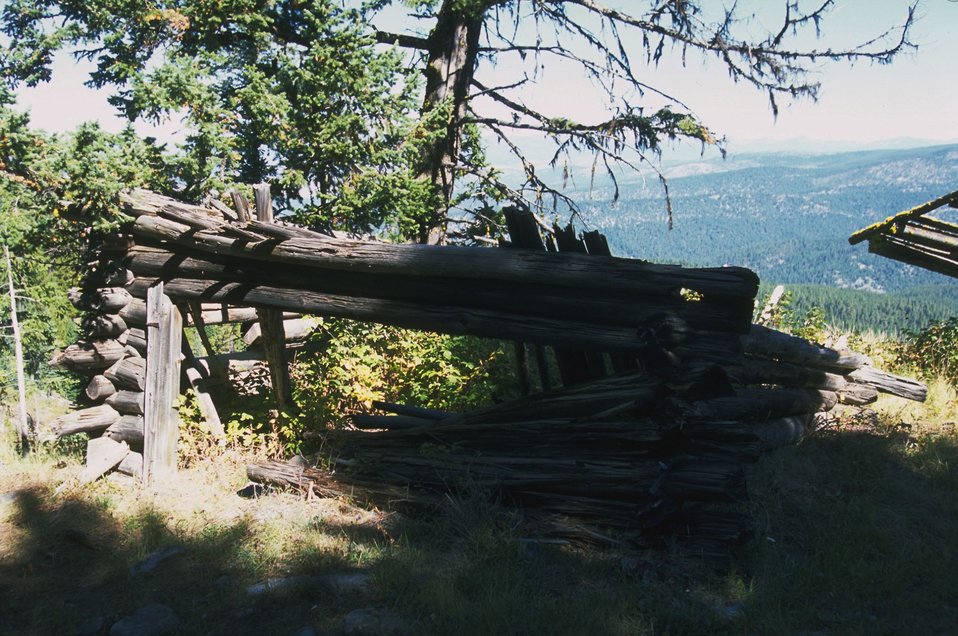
Old cabin in Coloma